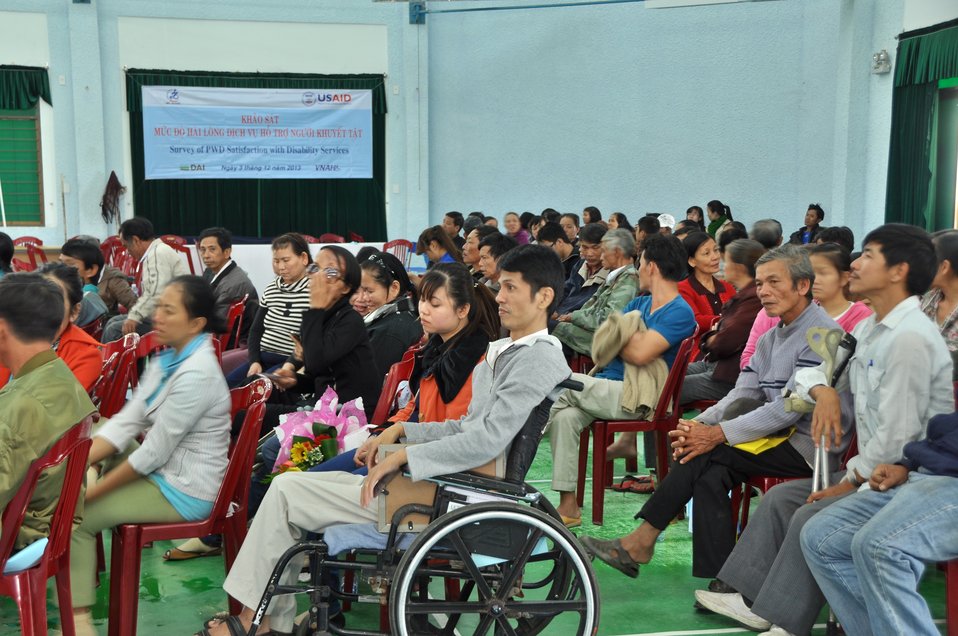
USAID Supports Commemoration of International Day of Persons with Disabilities 2013 in Danang

Danang, December 3, 2013.